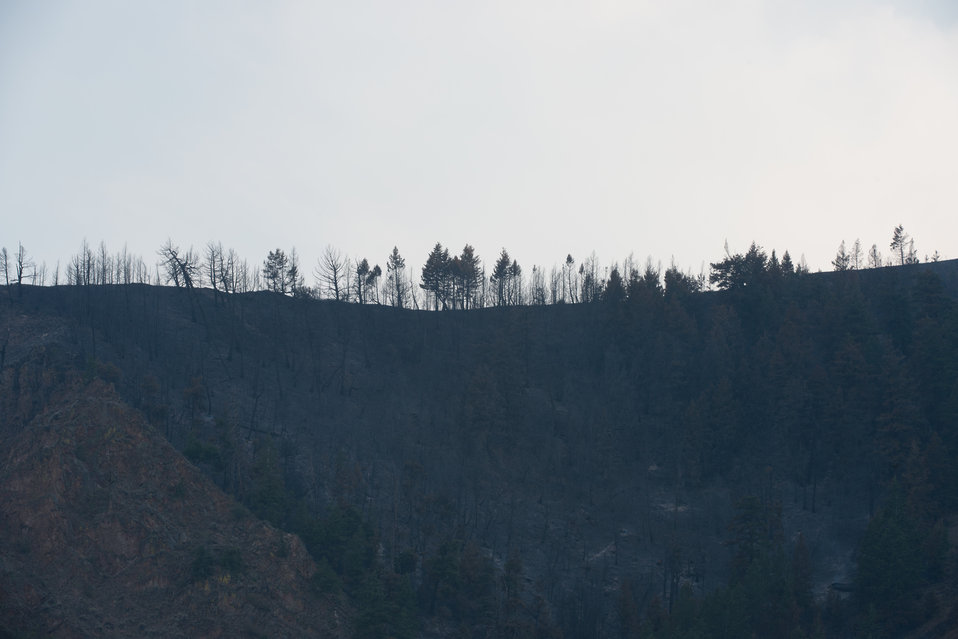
The Beaver Creek Fire left charred undergrowth and grounds on parts of the Carbonate Ridge west of Hailey, ID, on Monday, Aug 19, 2013.